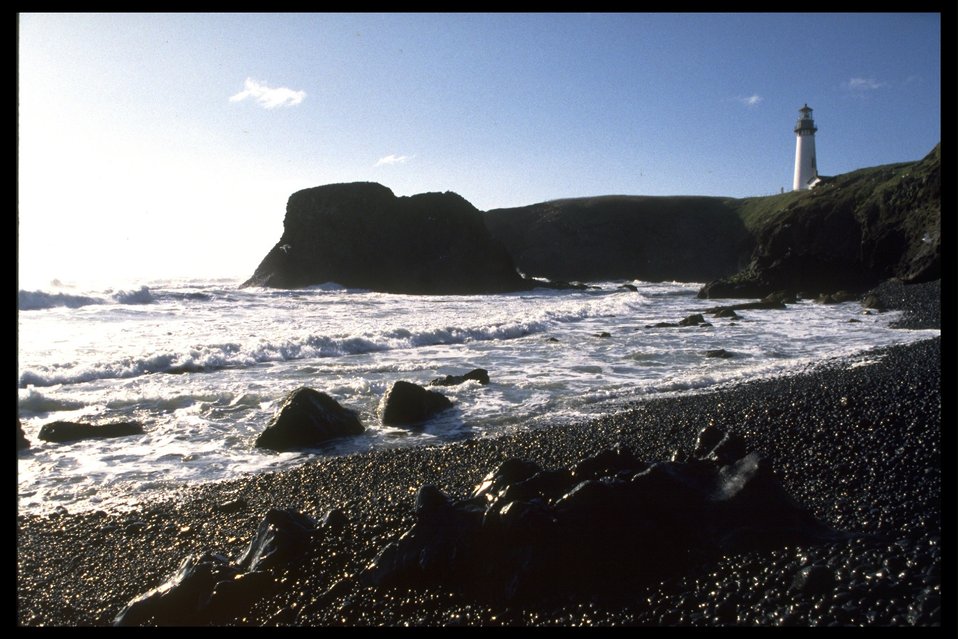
Yaquina Head Lighthouse.